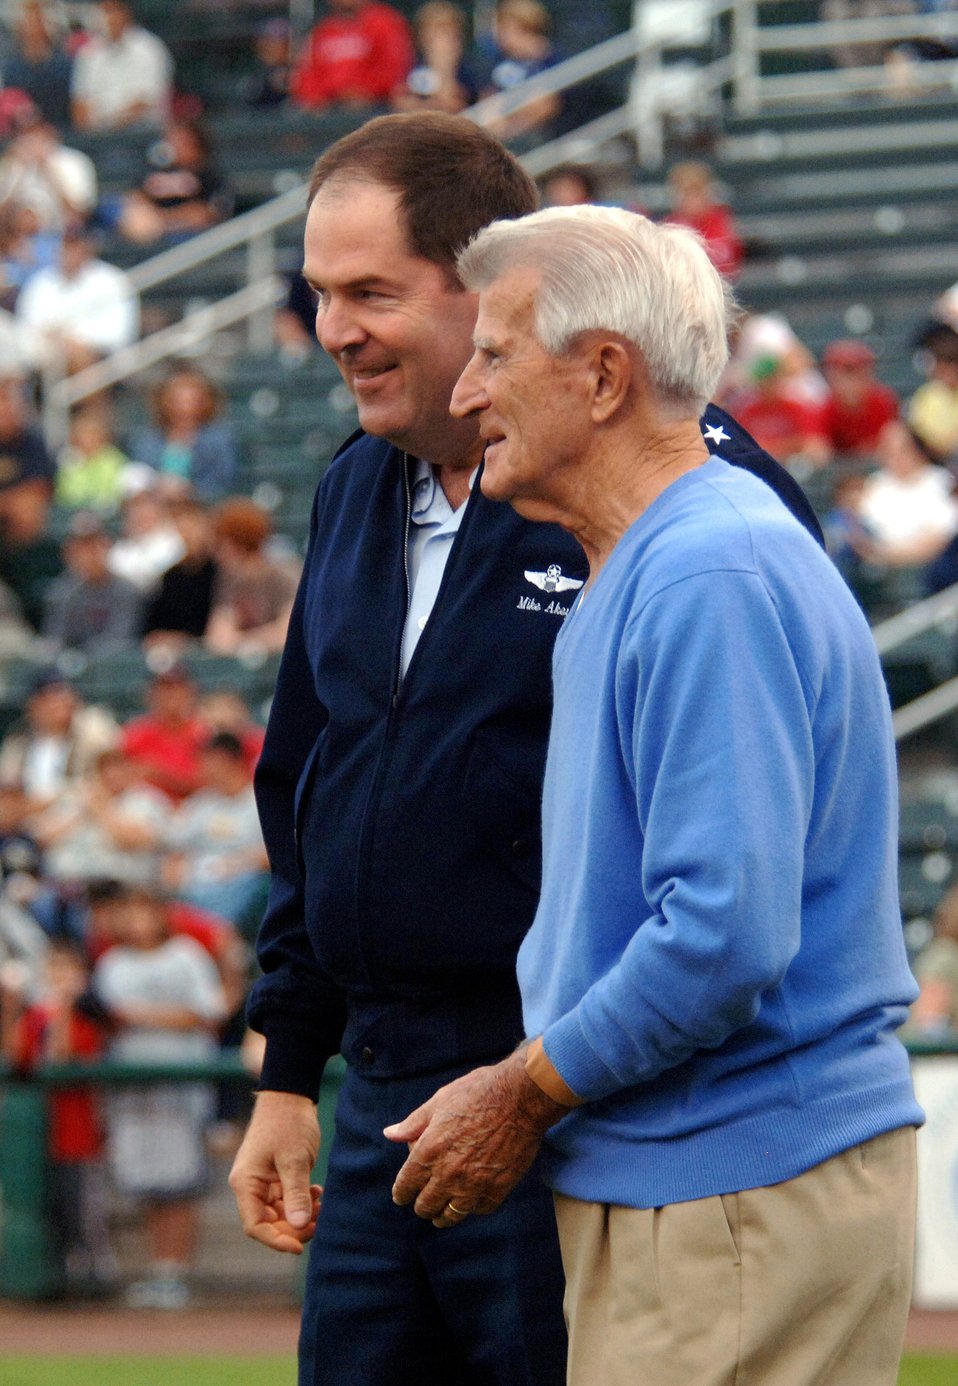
General, Red Sox icon make Air Force Week pitches

As part of Air Force Week New England festivities, Boston Red Sox icon Johnny Pesky, 87, gives Maj. Gen. Michael A. Akey, chief of staff of the Massachusetts Air National Guard, some advice before throwing out the first pitch for the Lowell, Mass., Spinners, a minor league team of the Boston Red Sox.